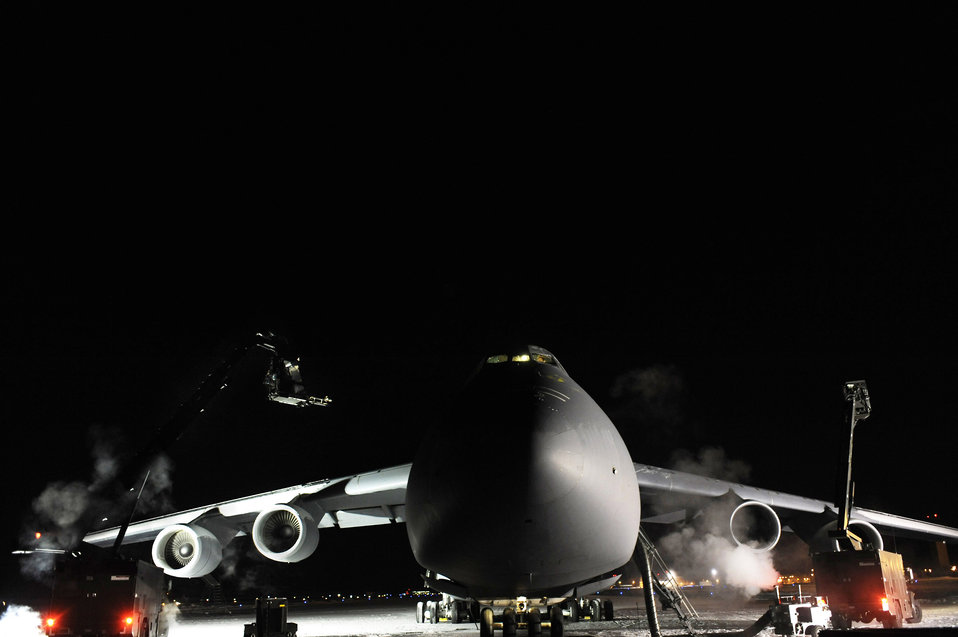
Super Galaxy endures super cold weather

Two de-icer vehicles work on a C-5M Super Galaxy after the aircraft sat outside for more than 24 hours in temperatures as low as minus 25 degrees during a cold weather test Dec. 14 at Eielson Air Force Base, Alaska. This is the first upgraded C-5M to go through cold-weather testing.